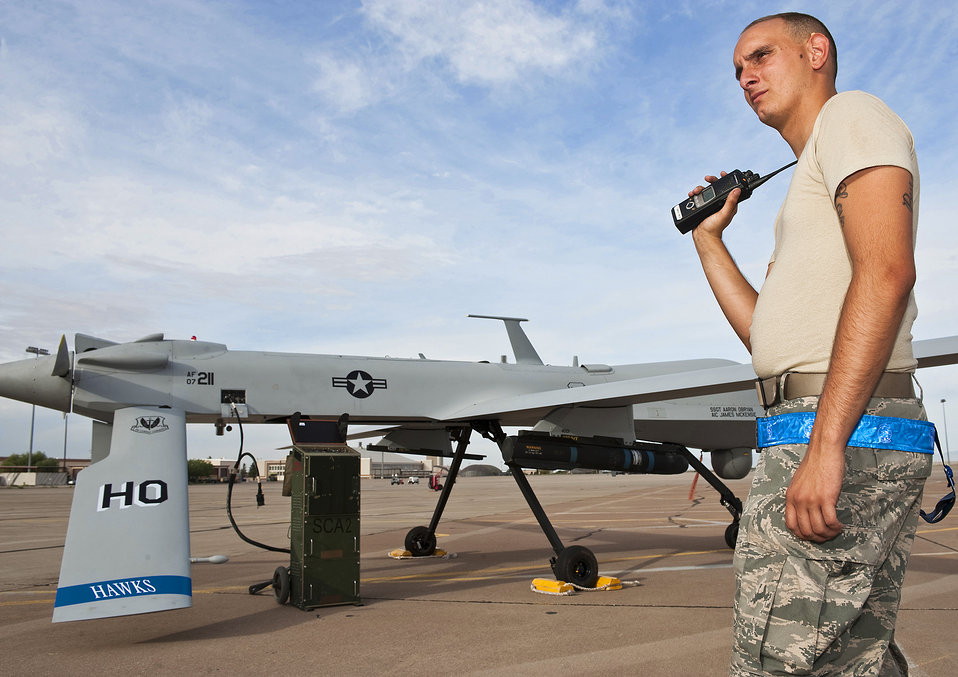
Waiting to go

Airman Steven Kleber listens to the operator of the MQ-1 Predator performing the pre-launch procedure checklist June 7, 2010, at Holloman Air Force Base, N.M. Airman Kleber is responsible for assuring the operator that everything is functioning properly and the aircraft is ready to fly. He is a crew chief with the 849th Aircraft Maintenance Squadron.